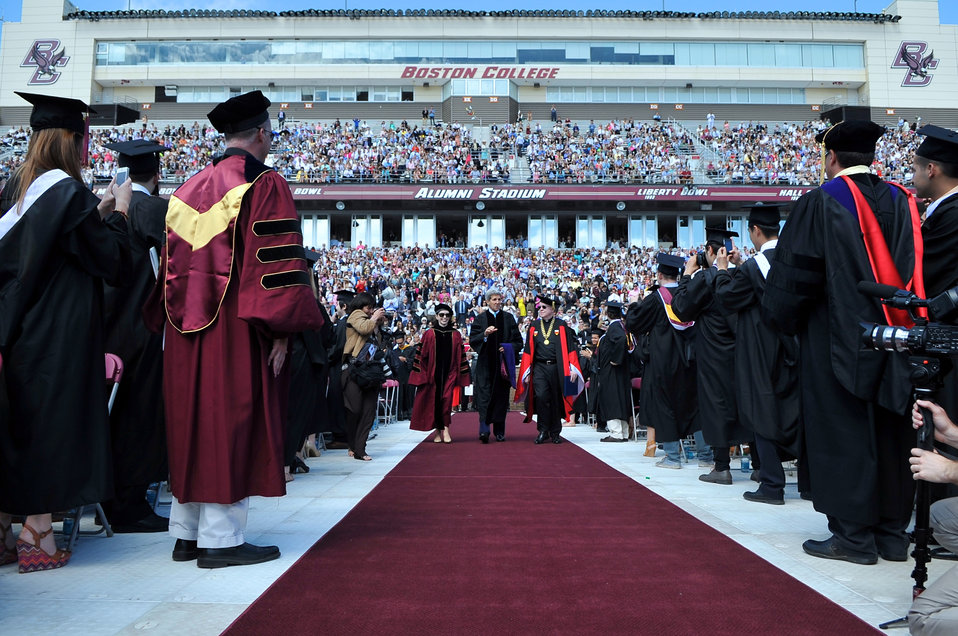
Secretary Kerry, President Leahy, Chairwoman McGillycuddy Arrive For Boston College Commencement

U.S. Secretary of State John Kerry, President William Leahy, and Board of Trustees Chairwoman Kathleen McGillycuddy enter Alumni Stadium at Boston College in Boston, Massachusetts, before the Secretary delivered the commencement address on May 19, 2014.